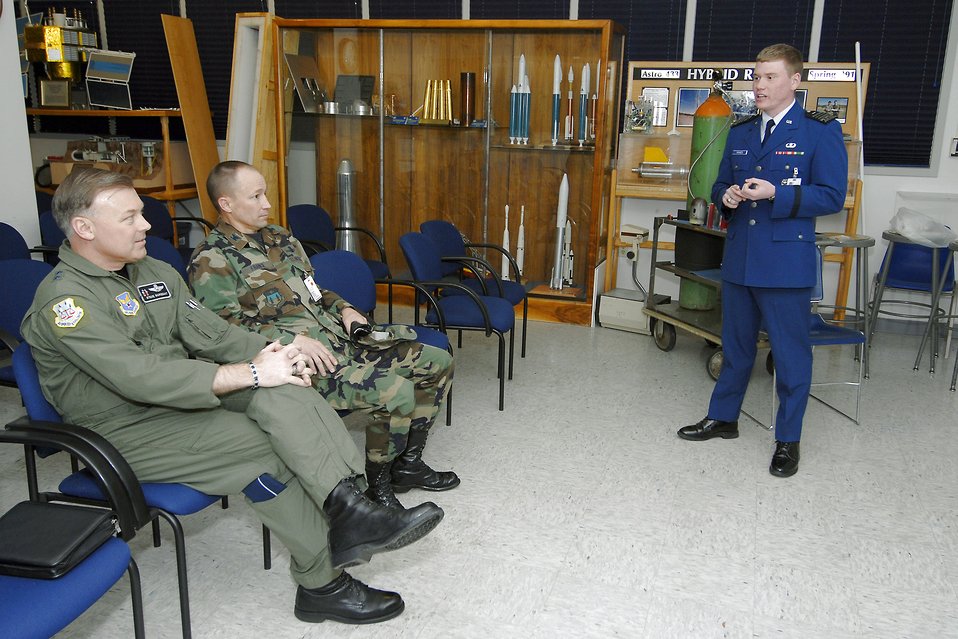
Air Force officials launch new mentoring program

Maj. Gen. Stephen T. Sargeant (left) listens to a U.S. Air Force Academy cadet during a cadet capstone team briefing March 17 at the Academy in Colorado Springs, Colo. General Sargeant is the Air Force Operational Test and Evaluation Center commander from Kirtland Air Force Base, N.M.